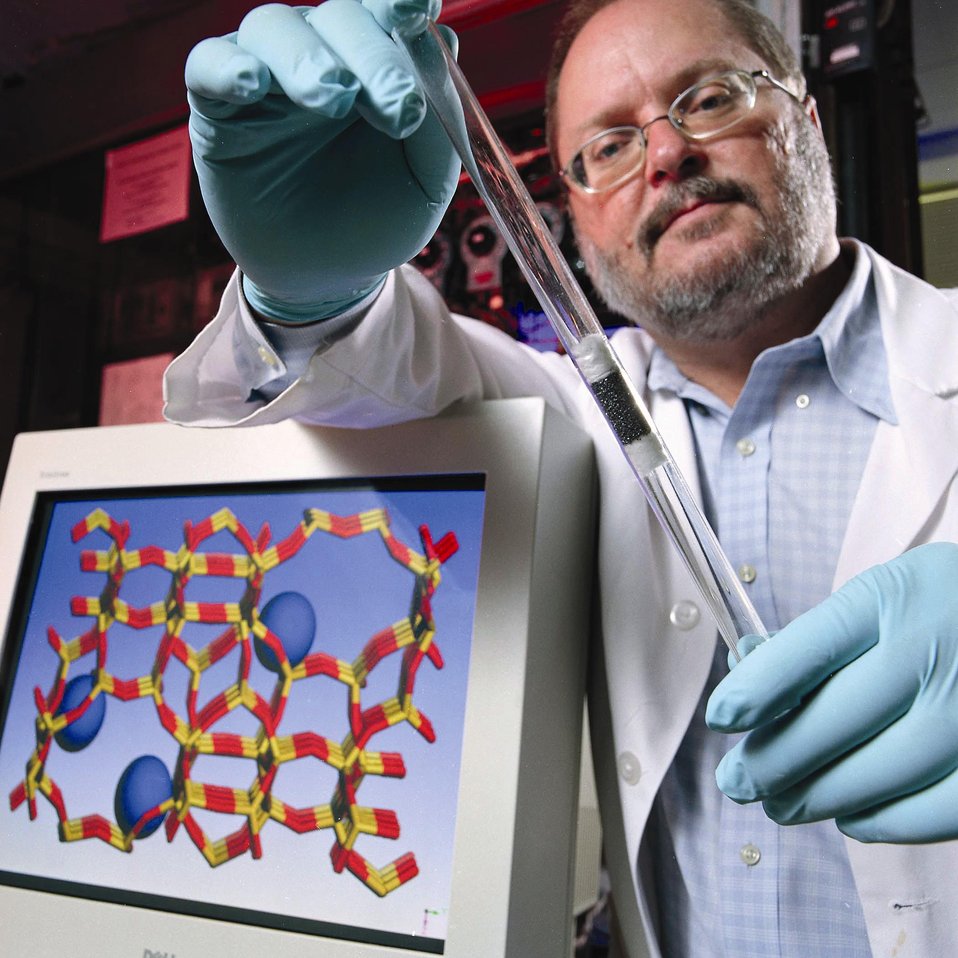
ARGONNE CHEMIST SHOWING A NEW CATALYST DEVELOPED BY ARGONNE NATIONAL LAB AND BP.

A NEW CATALYST DEVELOPED AT ANL IN COLLABORATION WITH BP TO REDUCE NITROGEN OXIDES FROM DIESEL ENGINES, COULD HELP AUTO MAKERS MEET THE U.S. ENVIRONMENTAL PROTECTION AGENCY'S DEADLINE TO ELIMINATE 95% OF NITROGEN OXIDE EMISSIONS FROM DIESEL EXHAUSTS BY 2007.